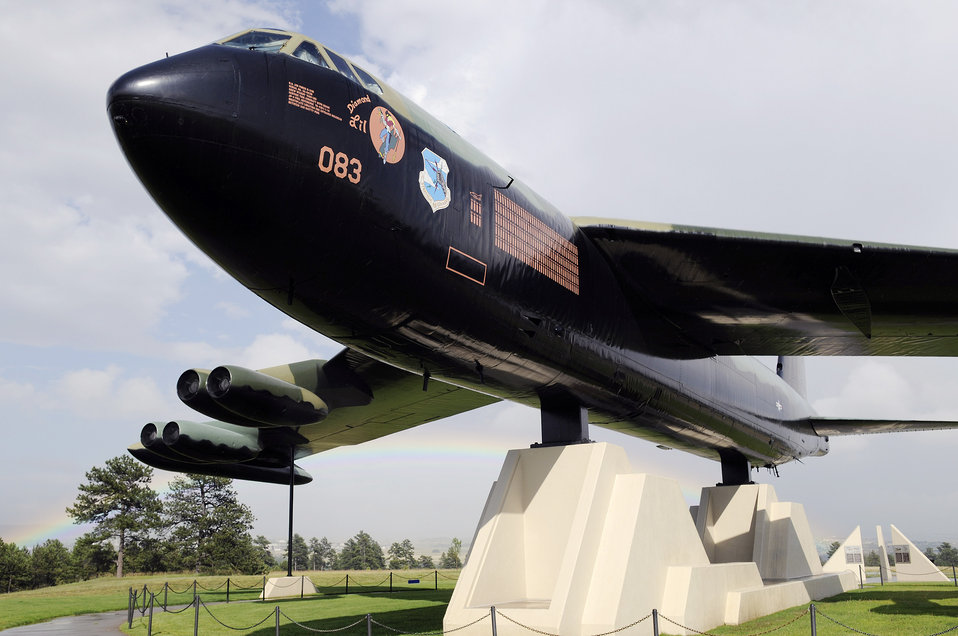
B-52D Static Display

U.S. Air Force Academy, CO -- Under the arch of a late afternoon rainbow Jul 30 at the U.S. Air Force Academy, is B-52D